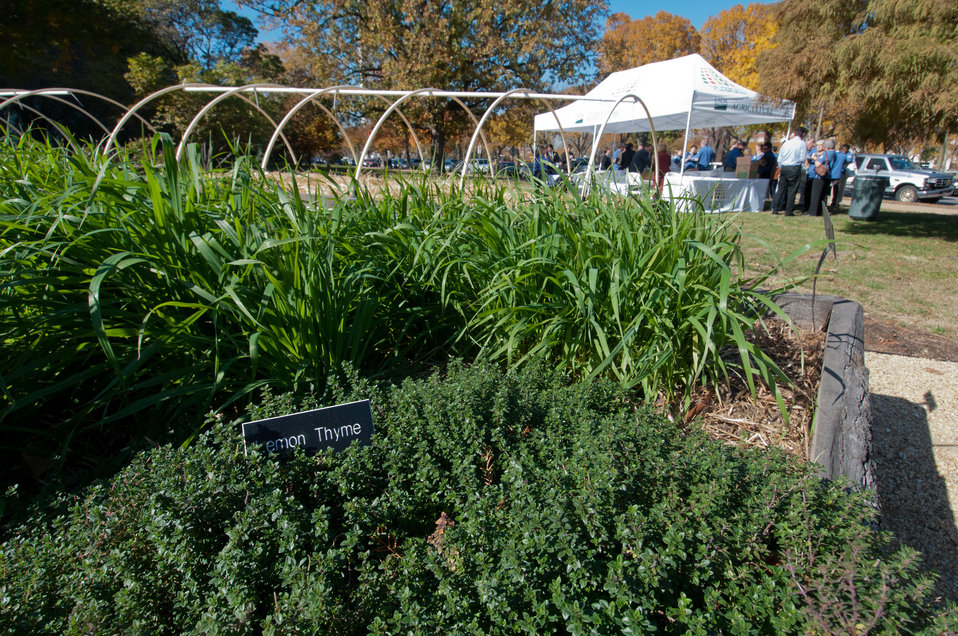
Graduation day of the 2011 U.S. Department of Agriculture (USDA) Executive Master Gardeners, on Tuesday, November 8, 2011 in Washington, DC. During the past six-weeks, students contributed 40-hours of volunteer time, completed studies and testing to receive their certificates today as an Executive Master Gardener. Many of the sessions occurred before work hours, during lunchtime or at community garden project sites such as Powell Middle School. USDA challenges its employees to establish People's Gardens at USDA facilities worldwide or in community gardens. People's Gardens vary in size and type, but all have a common purpose - to help the community and the environment. To learn about the People’s Garden Initiative visit www.usda.gov/wps/portal/usda/usdahome?contentid=peoples g....